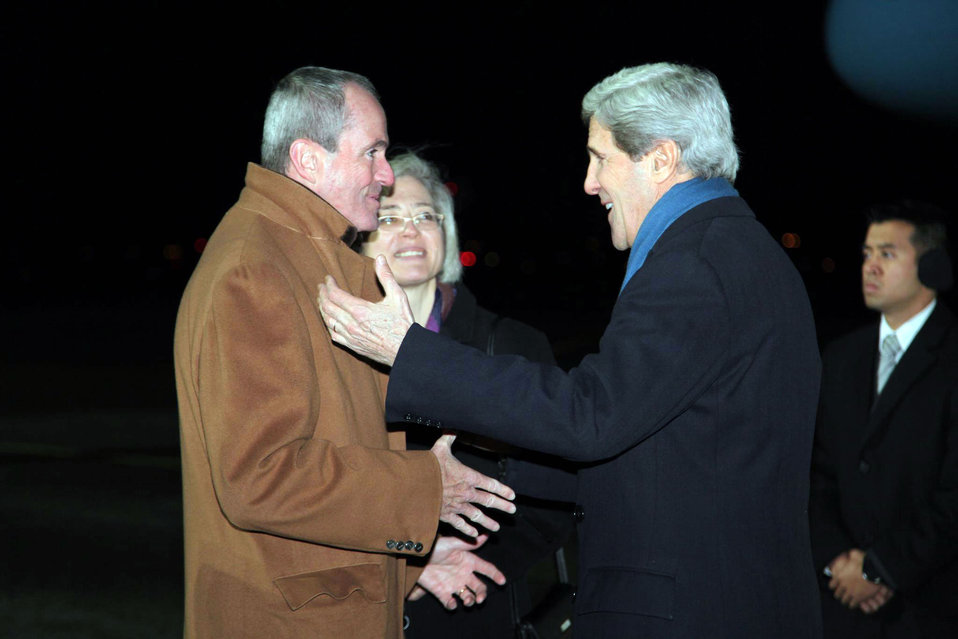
Secretary Kerry Arrives in Berlin, Germany

U.S. Secretary of State John Kerry is greeted by U.S. Ambassador to Germany Philip Murphy and German Head of Protocol Claudia Schmitz upon arriving at Tegel Airport in Berlin, Germany, February 25, 2013.